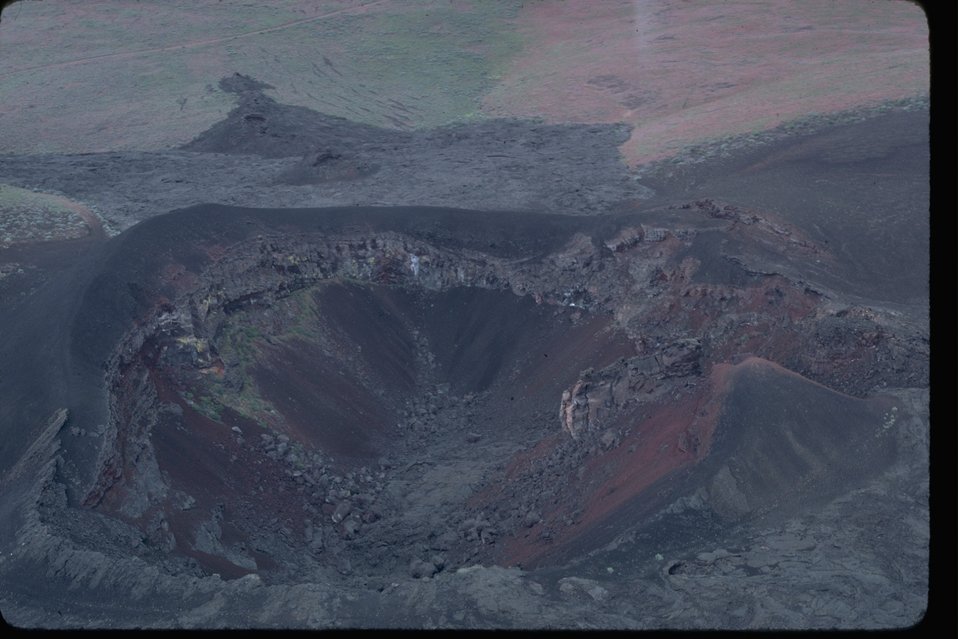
Jordan Craters Wilderness Study Area near Coffee Pot. OR 3-128.